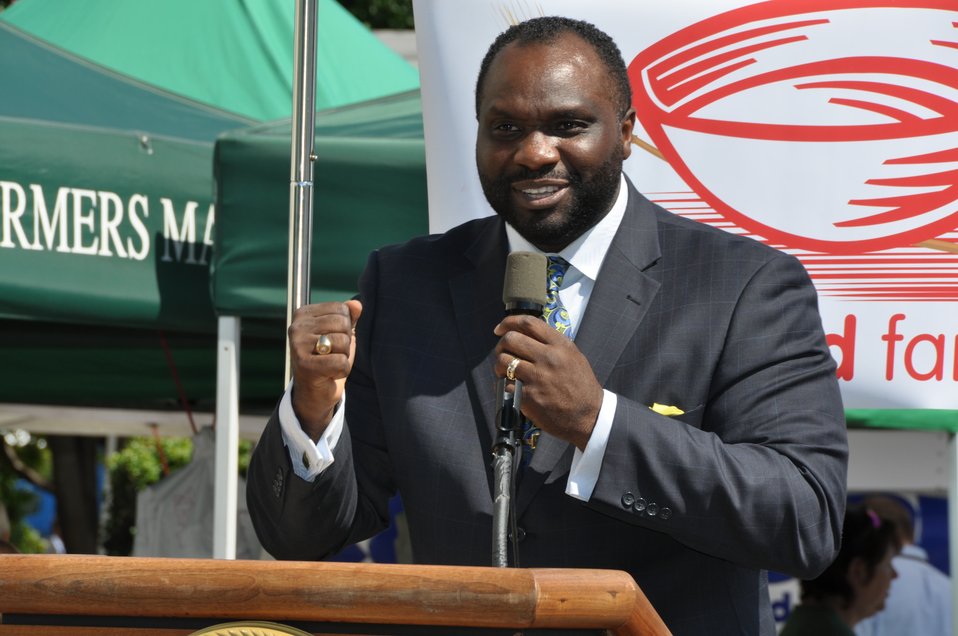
Williams at Feds Feed Families Kick-Off

Duane Williams, the USDA Coordinator for Feds Feed Families, gives opening remarks at the kick-off event at the USDA Farmers Market.